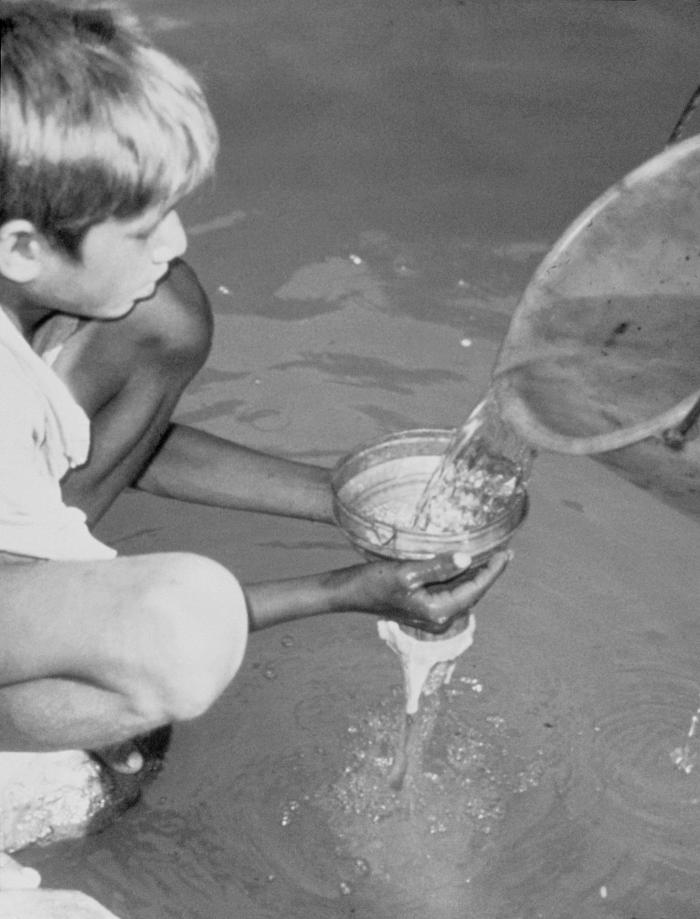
This 1990 photograph depicted a child who was holding a strainer composed of a metal funnel, and a piece of filter cloth. Water taken from the same river, was being poured through the strainer from a bucket in order to extract the indigenous copepods, to be observed by the local inhabitants. The importance of the copepod presence lies in the fact that they are carriers of the larval 'Guinea worm' parasite, Dracunculus medinensis, and their ingestion leads to one becoming infected with Guinea worm disease (GWD). Once inside the body, the stomach acid digests the water flea, but not the Guinea worm. These larvae find their way to the small intestine, where they penetrate the wall of the intestine and pass into the body cavity. During the next 10-14 months, the female Guinea worm grows to a full size adult 60-100 centimeters (2-3 feet) long and as wide as a cooked spaghetti noodle, and migrates to the site where she will emerge, usually the lower limbs.